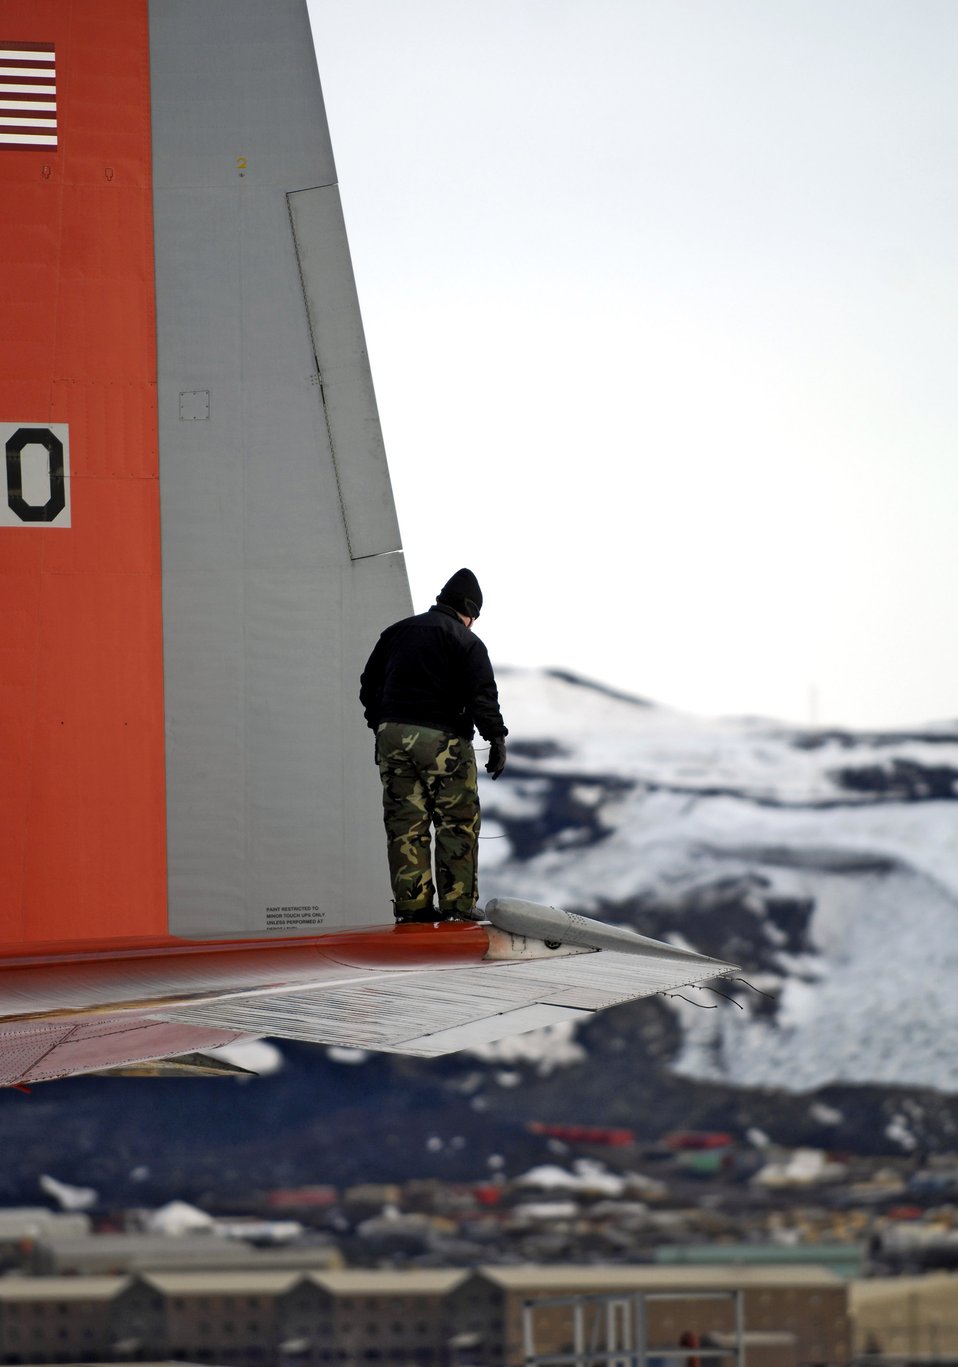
Operation Deep Freeze main season underway

Tech. Sgt. Tammy Kirwan conducts a post flight check of an LC-130 Hercules Nov. 27 on the ice runway near McMurdo Station, Antarctica, during Operation Deep Freeze. Ski-equipped LC-130s, crews and support personnel from the New York Air National Guard's 109th Airlift Wing are supporting the 13th Air Force-led Joint Task Force Support Forces Antarctica, Operation Deep Freeze.